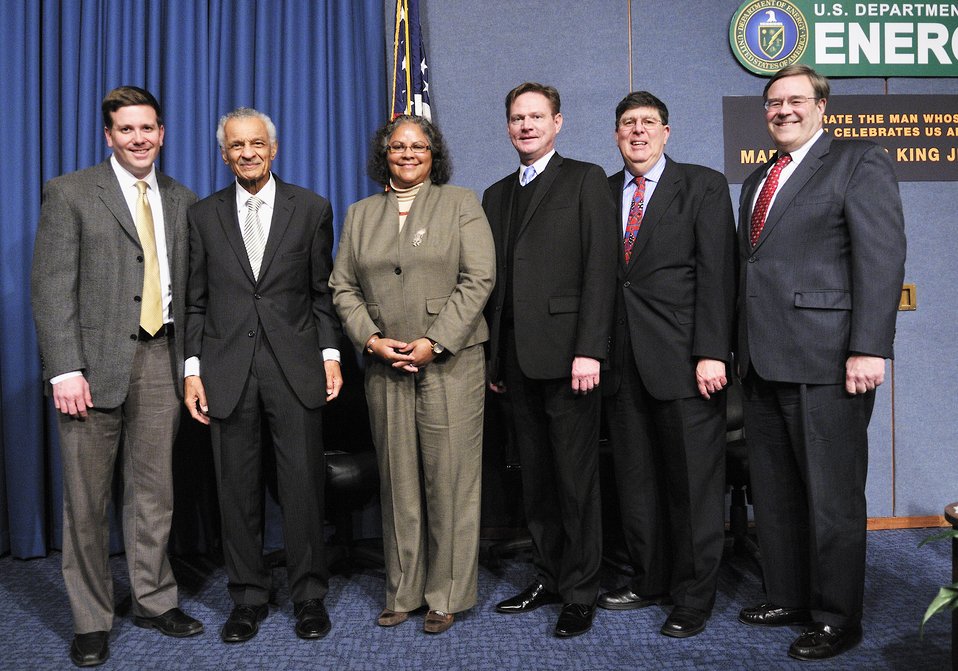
From left to right - Daniel Zazueta, member of the Hispanic Association of DOE, Rev. C.T. Vivian, Pilar Thomas, Lynn Cothren, Rabbi Charles Feinberg, Michael Kane, Chief Human Capital Officer.

Martin Luther King Jr. Day Celebration at DOE headquarters.